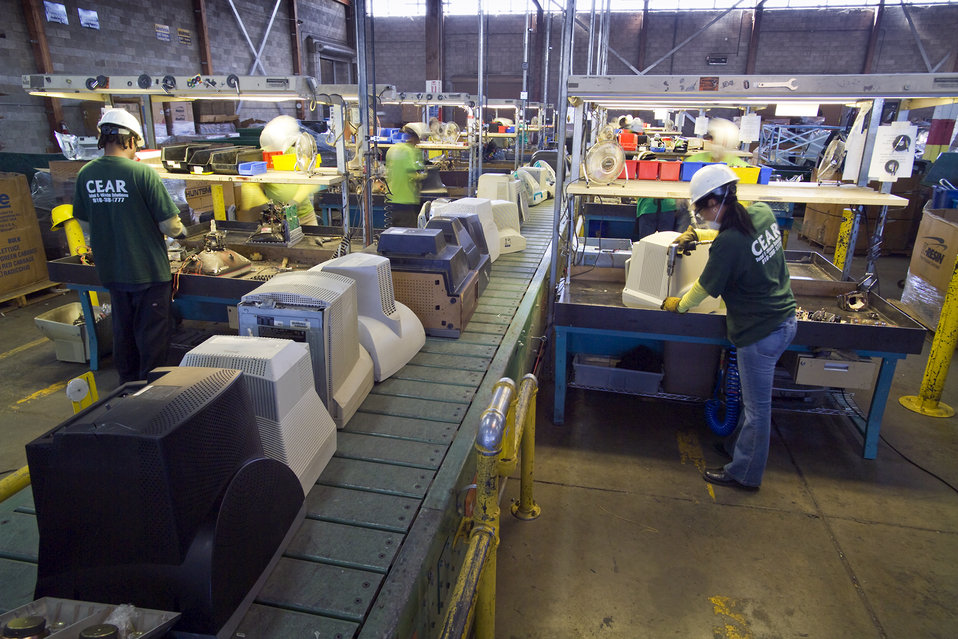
Green businesses

Employees at California Electronic Asset Recovery at the former Mather Air Force Base in Sacramento, Calif., dismantle monitors. CEAR workers recycled more than 15 million pounds of e-waste last year.